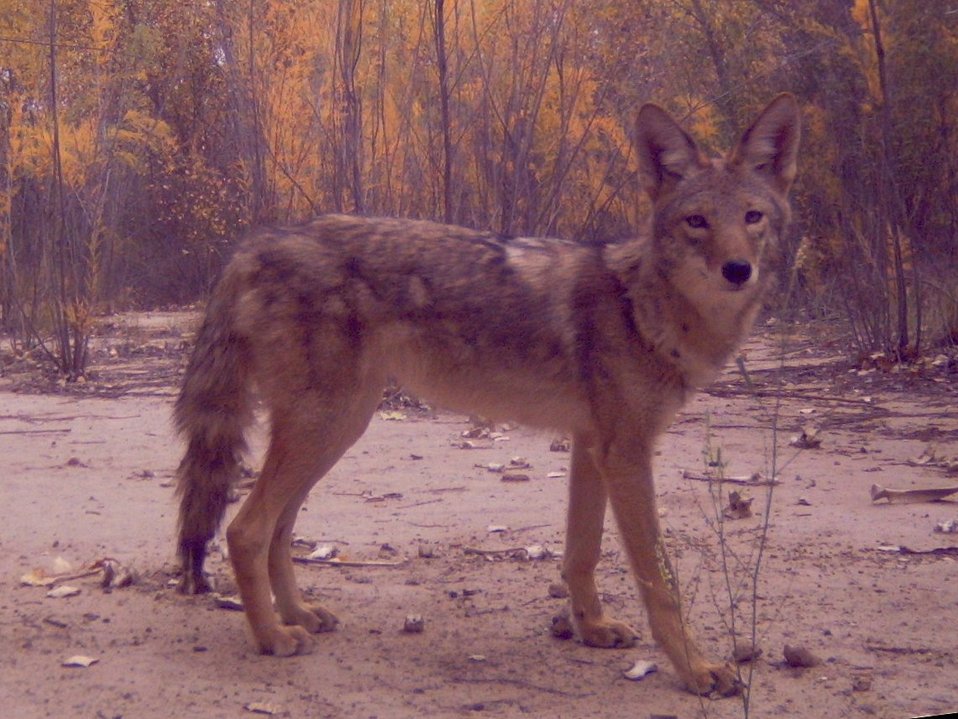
coyote

Bosque del Apache National Wildlife Refuge, NM
Camera trap project by Matthew Farley, Jennifer Miyashiro and James Stuart
Photo made available by J.N. Stuart, Creative Commons